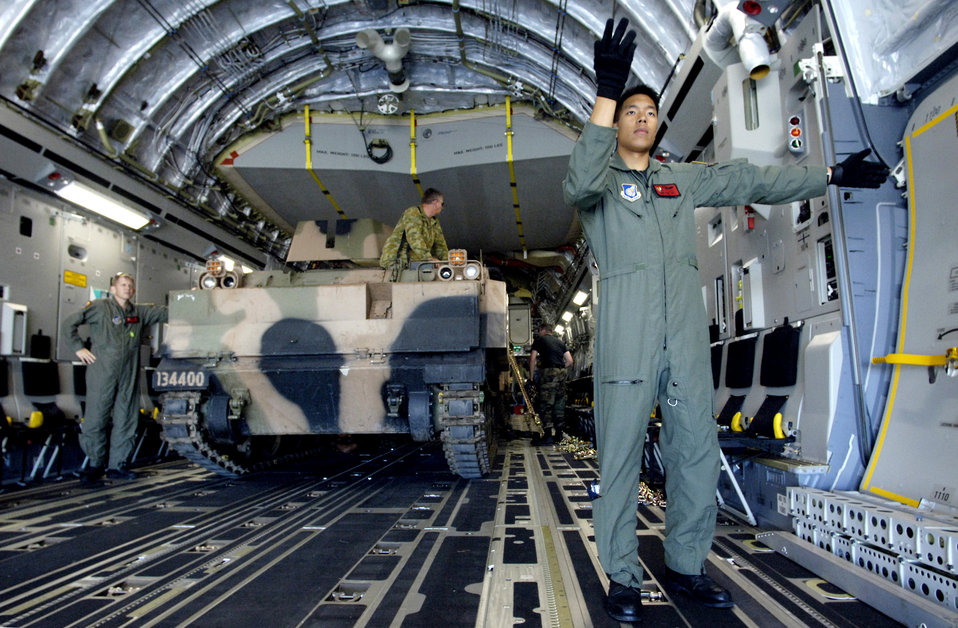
Combat Mobility Element moves cargo quickly, safely

Airman James Ngo marshals in a second armored personnel carrier onto a C-17 Globemaster III at Royal Australian Air Force Base Townsville, Australia, on Tuesday, May 30, 2006. Two C-17s from the 15th Airlift Wing and the Hawaii Air National Guard's 154th Wing at Hickam Air Force Base, Hawaii, are helping the Australian Defense Force reposition its forces in Australia to better support peace operations in East Timor. Airman Ngo is assigned to the 535th Airlift Squadron.